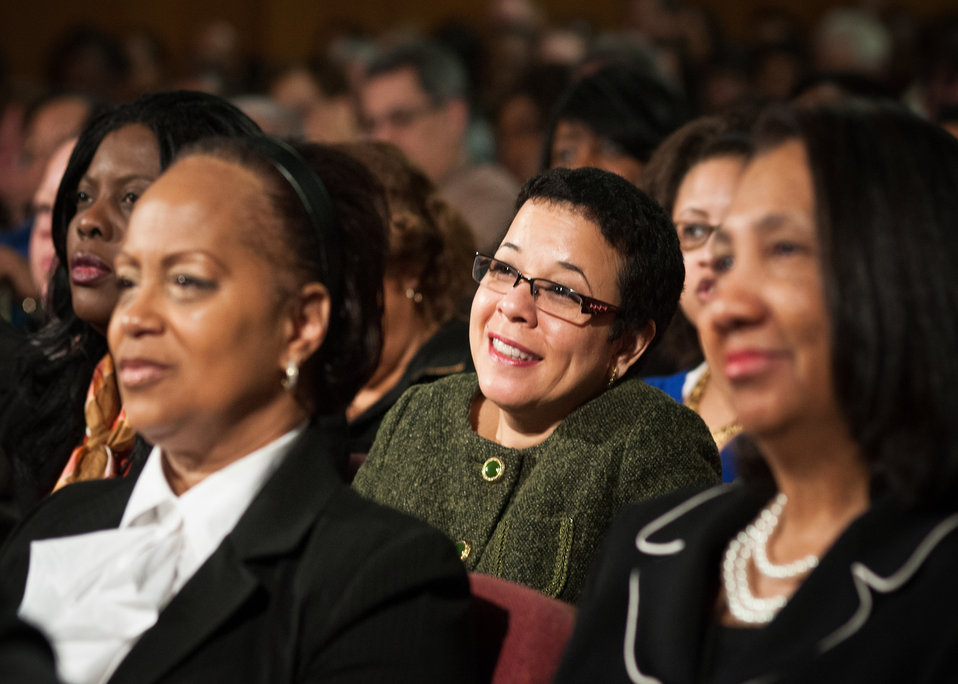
Romona Romero, U.S. Department of Agriculture, General Council listens Dr. William R. Harvey, President, Hampton University, Hampton, Virginia addresses employees and visitors on Dr. Martin Luther King’s life and lessons during the National Service Day and Martin Luther King Celebration in honor of Dr. Martin Luther King Jr.’s contributions to the Civil Rights Movement at the United States Department of Agriculture in Washington, D.C., on Thursday, January 12, 2012. Dr. Harvey spoke of Dr. King’s life and struggles and how we as citizens can use those lessons to improve our lives and the lives of others by the simple act of service to others.